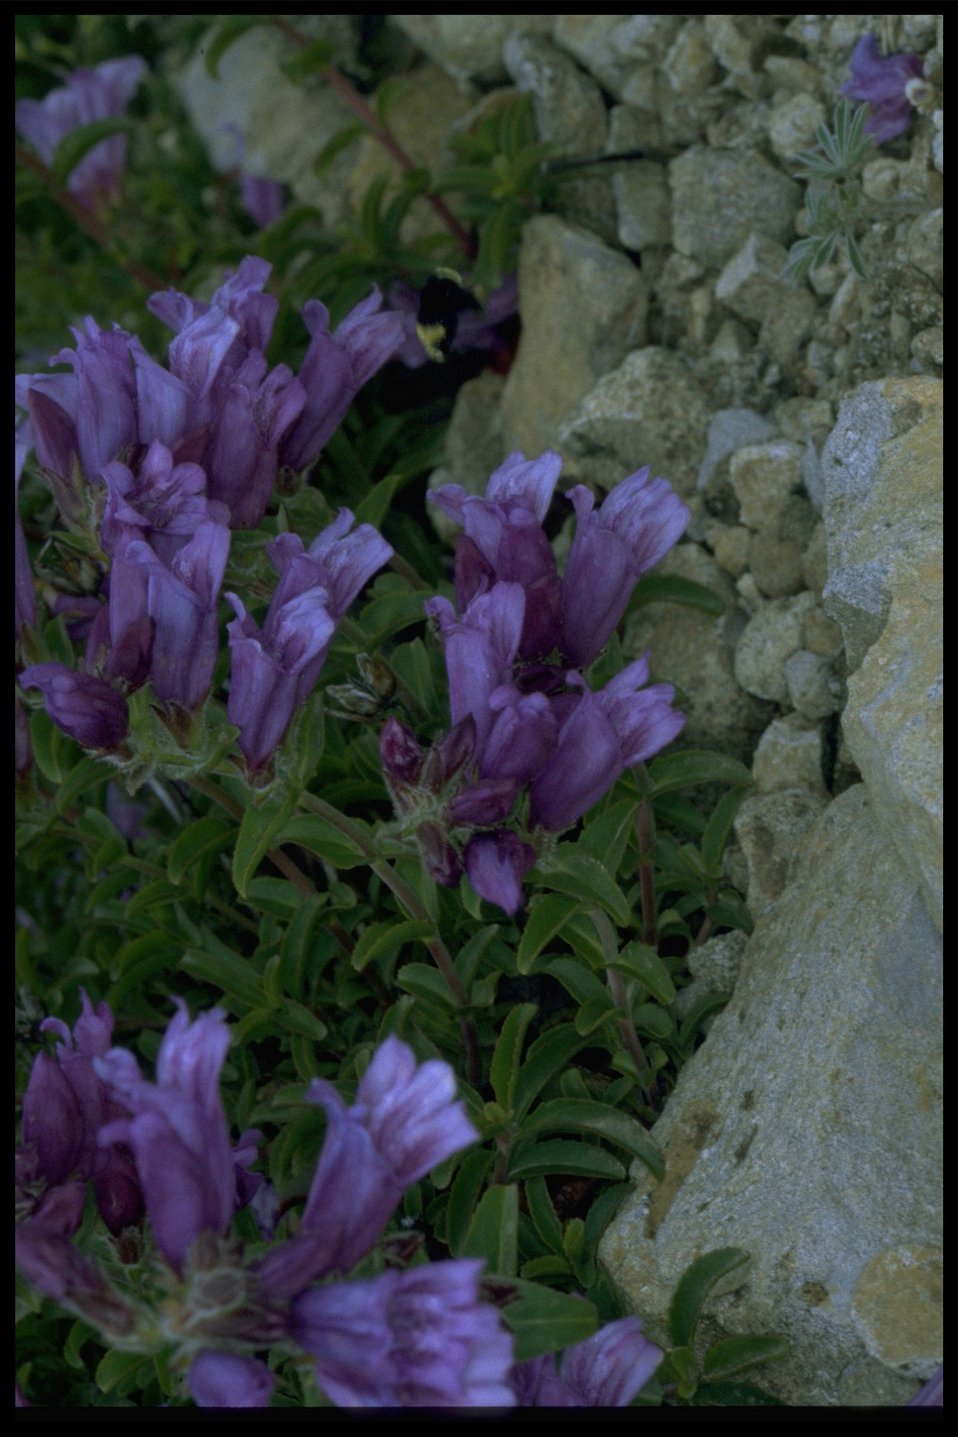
Medium shot of wildflowers (genus Penstemon).